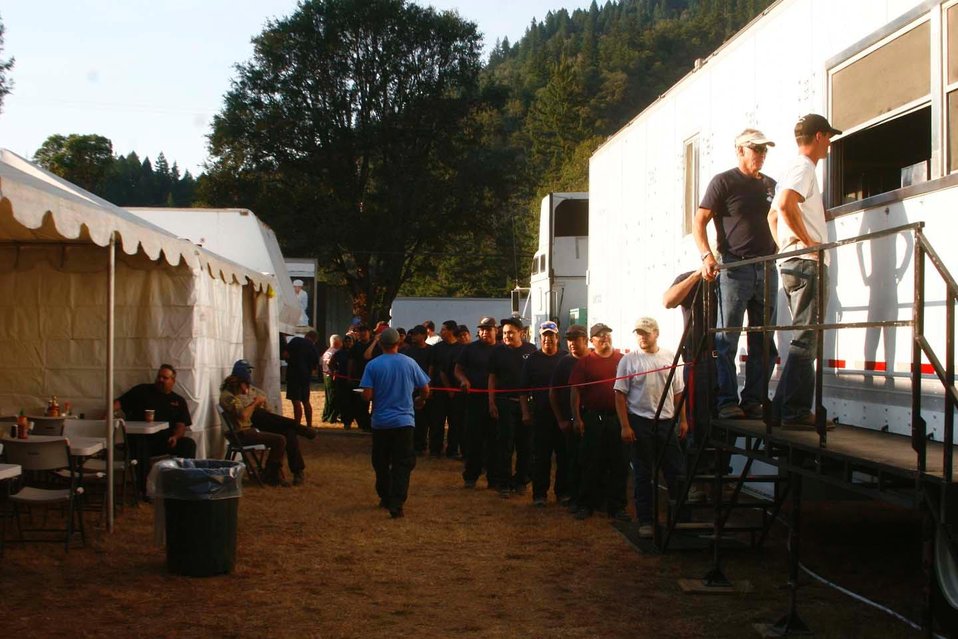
Fire crews stand in line for dinner at the dining trailer at the Corral Complex Fire Incident Command Post. The Corral Complex Fire in the Six Rivers National Forest near the Trinity Alps Wilderness area in California began on Aug. 10, 2013 by lightning and has consumed approximately 4, 450 acres.